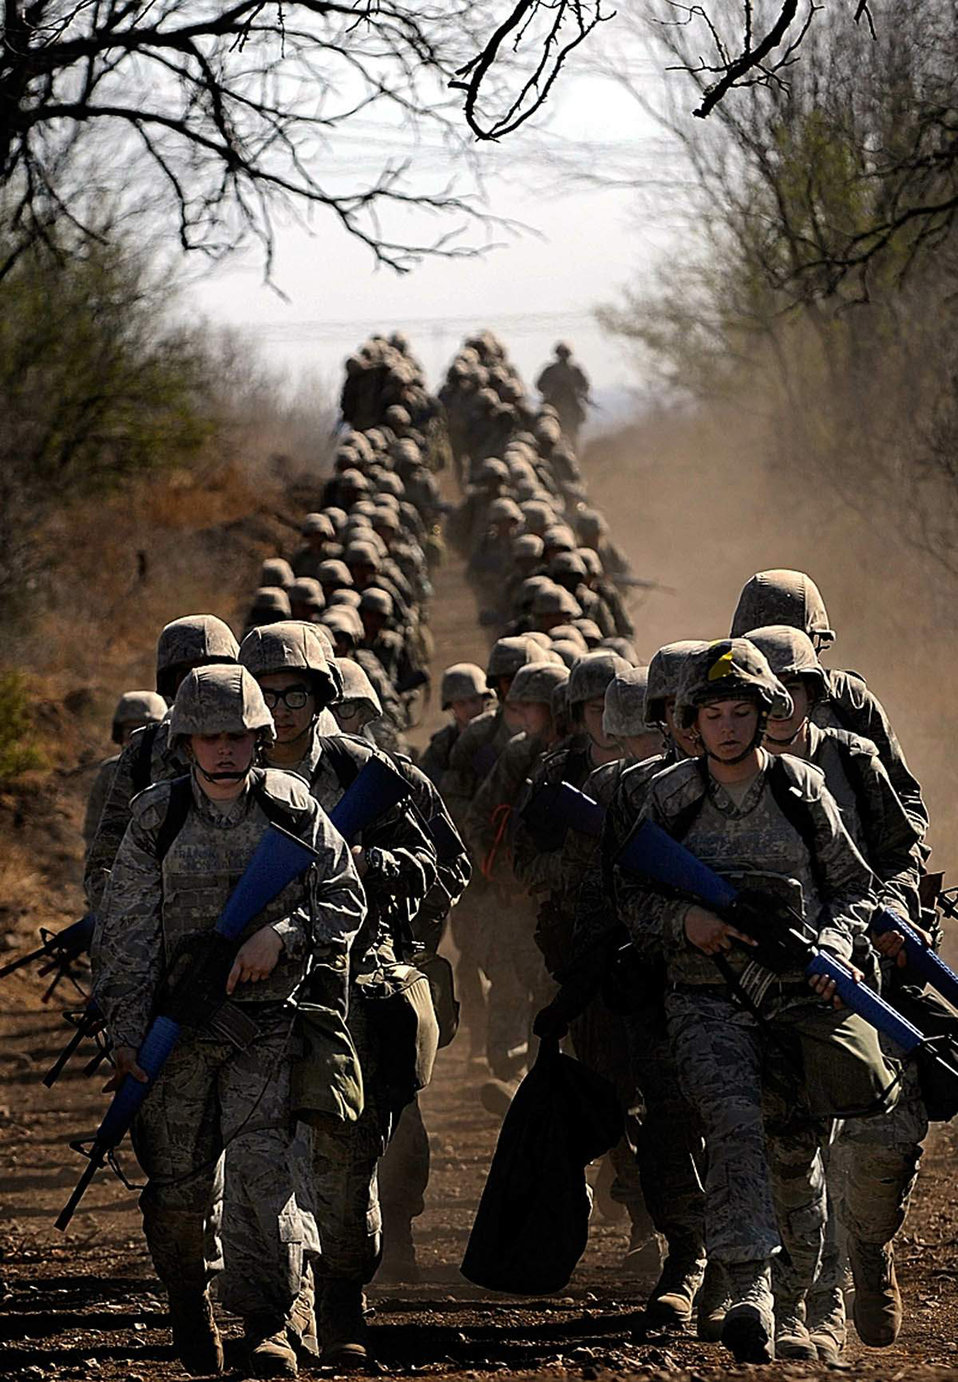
Forward, march

Air Force basic trainees equipped with combat gear march in two columns from a mock air base where they practiced a defensive scenario during Basic Military Training May 27 at Lackland Air Force Base, Texas.